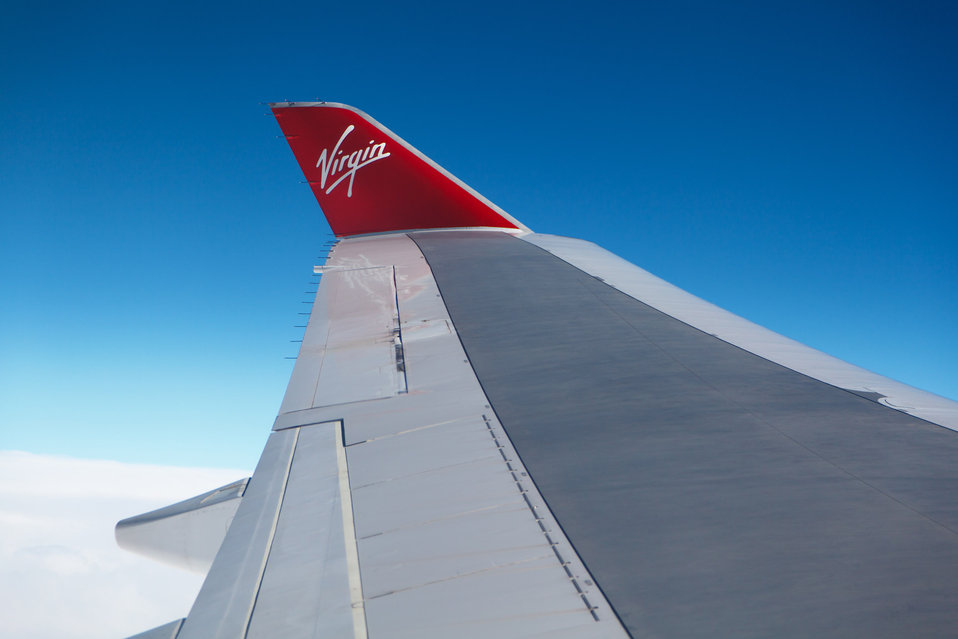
Airplane wing

Virgin atlantic airplane wing with blue sky and white clouds below.